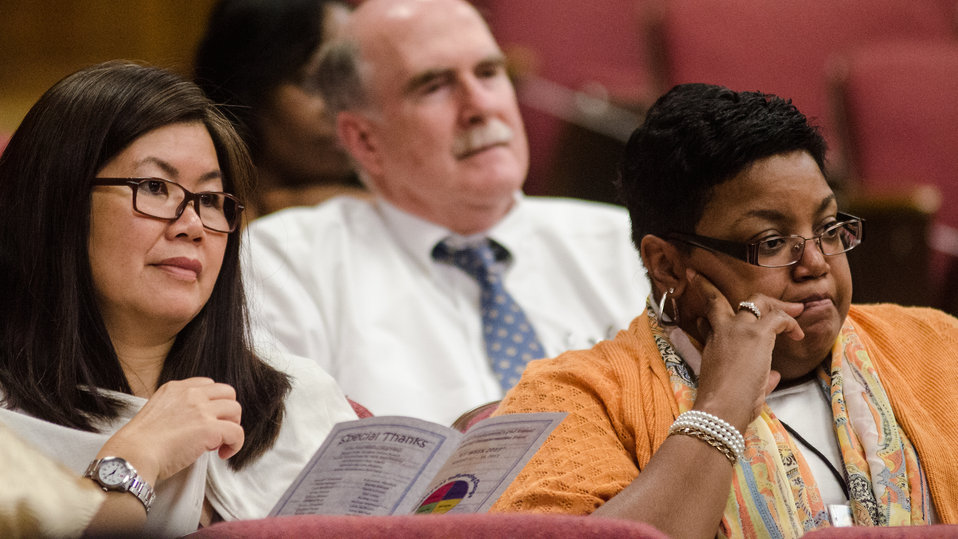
U.S. Department of Agriculture (USDA) employees listen to speakers at USDA’s RD 2nd Annual Cultural Transformation kickoff opening ceremony and forums, themed “Employees Influencing Change,” on Tuesday, Aug. 13, 2013 USDA in Washington, D.C.